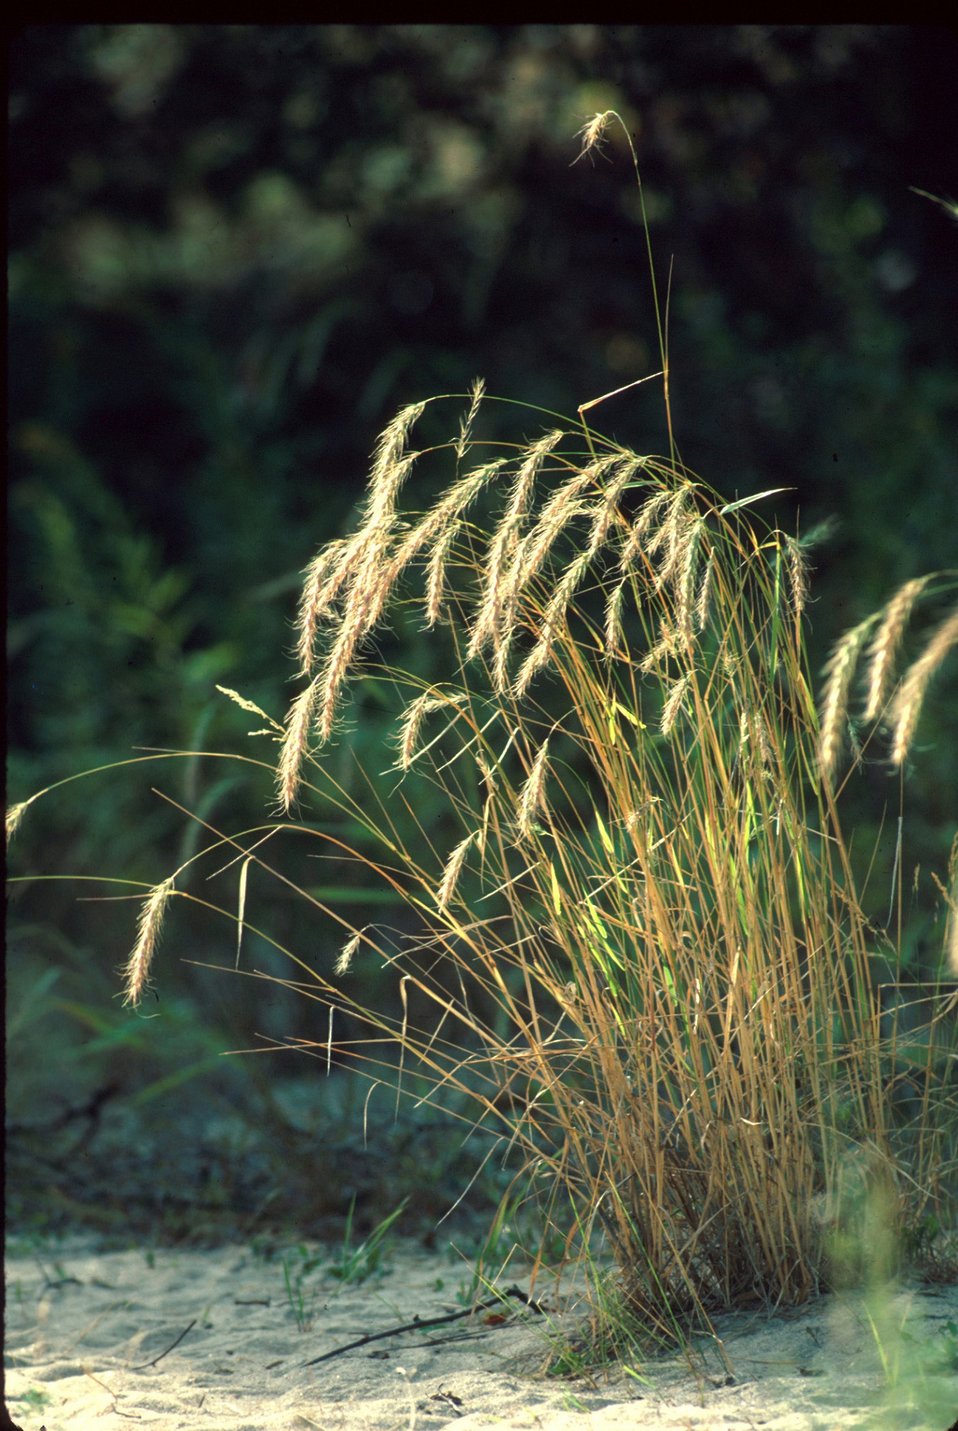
Elymus involutus River wild rye grass